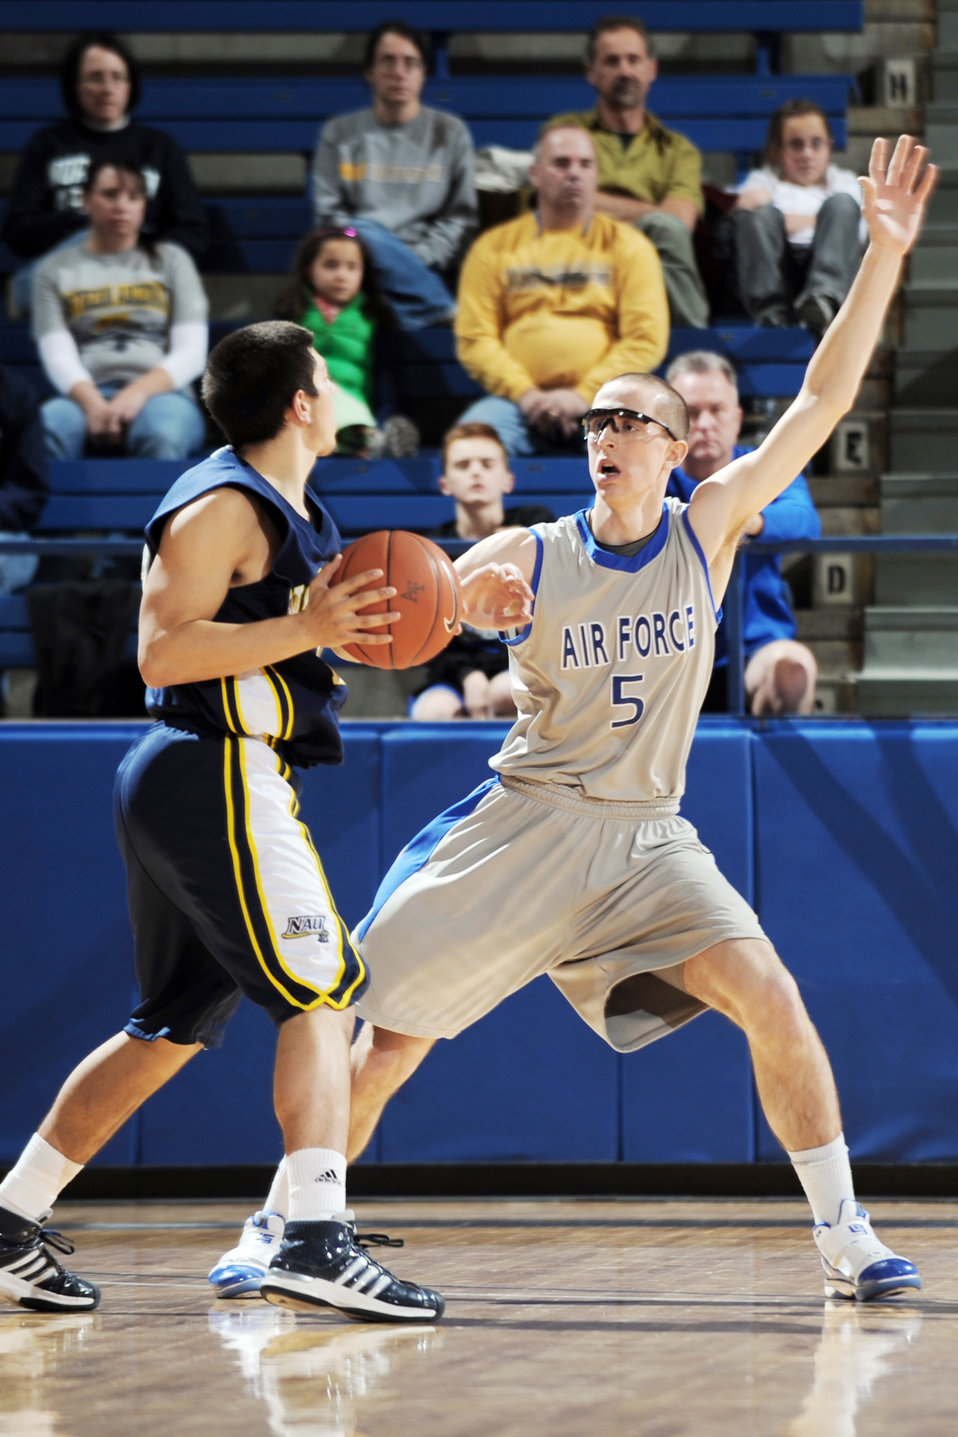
Falcons vs Northern Arizona

U. S. Air Force Academy freshman Mike Fitzgerald tries to block during the Falcons' game against Northern Arizona at the Academy's Clune Arena Dec. 19, 2009. Air Force lost the game 60-52.